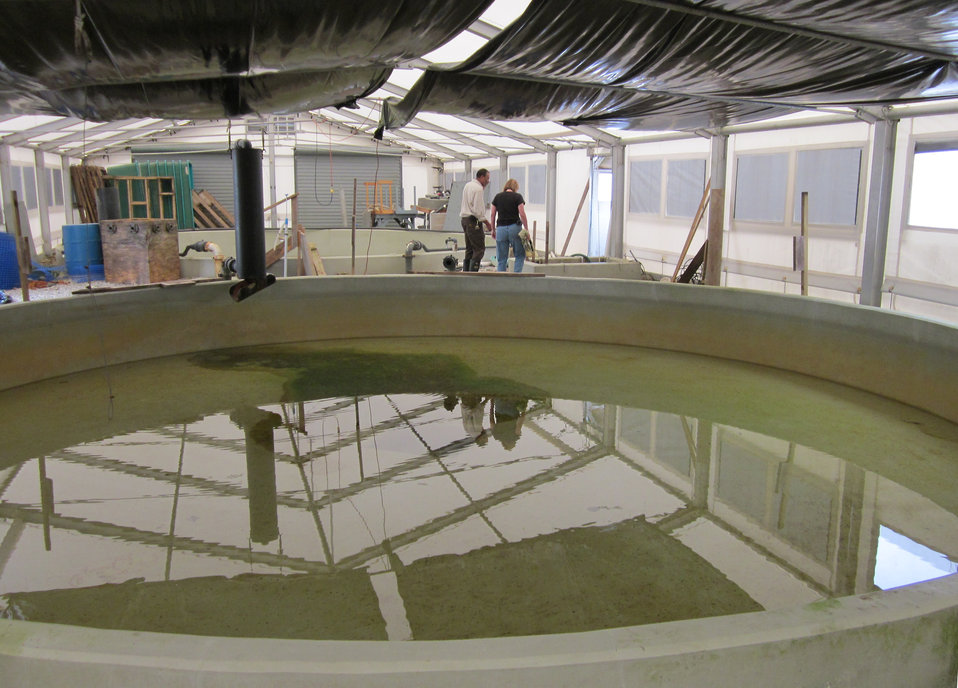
Control box for shad tank spawning

North Attleboro, MA, June 2012: Hatchery manager Larry Lofton shows Deputy Regional Director Deborah Rocque a control box next to a pool used for tank spawning at North Attleboro National Fish Hatchery.

Fish biologists capture adult shad from the Merrimack and Connecticut Rivers and transport them to the hatchery where tank spawning occurs. The fertilized eggs flow through a drain to a control box where they are collected and placed into egg cylinders hung around tanks. When the shad larvae hatch in about 4 days, they swim into the tanks through chutes at the top of the cylinders. The larvae are marked with oxytetracycline and released after a few days, for a turnaround time of about a week from egg to release in the Merrimack and Charles Rivers.

In 2012, the hatchery quadrupled past production for a projected total of 7-8 million shad.